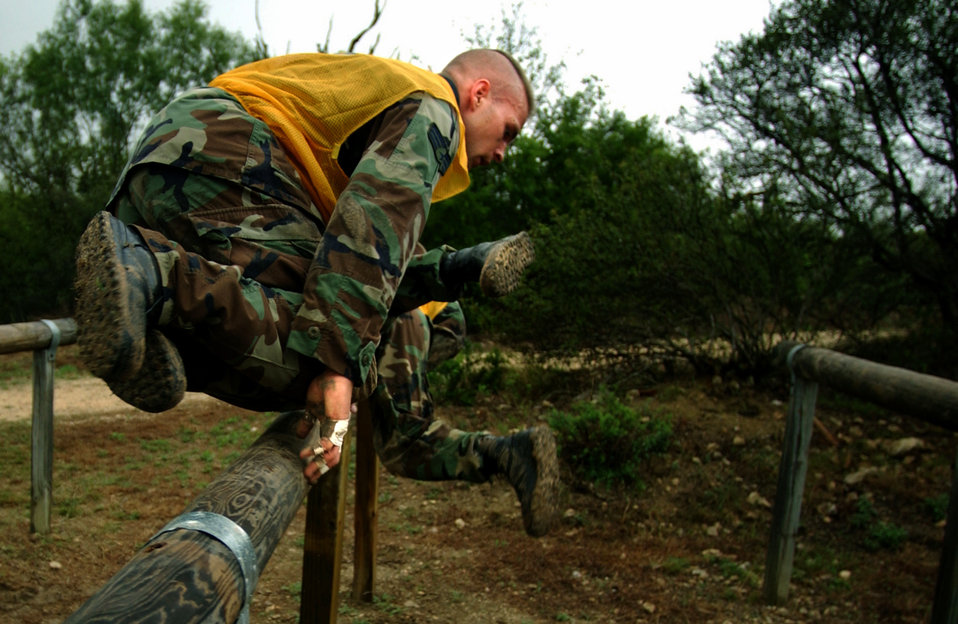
Defender Challenge 2004

LACKLAND AIR FORCE BASE, Texas -- Senior Airman Chris Clawson leaps over an obstacle Oct. 23 while competing in Defender Challenge 2004. Defender Challenge, a security forces competition is held here. Airman Clawson is assigned to the 39th Security Forces Squadron at Incirlik Air Base, Turkey.